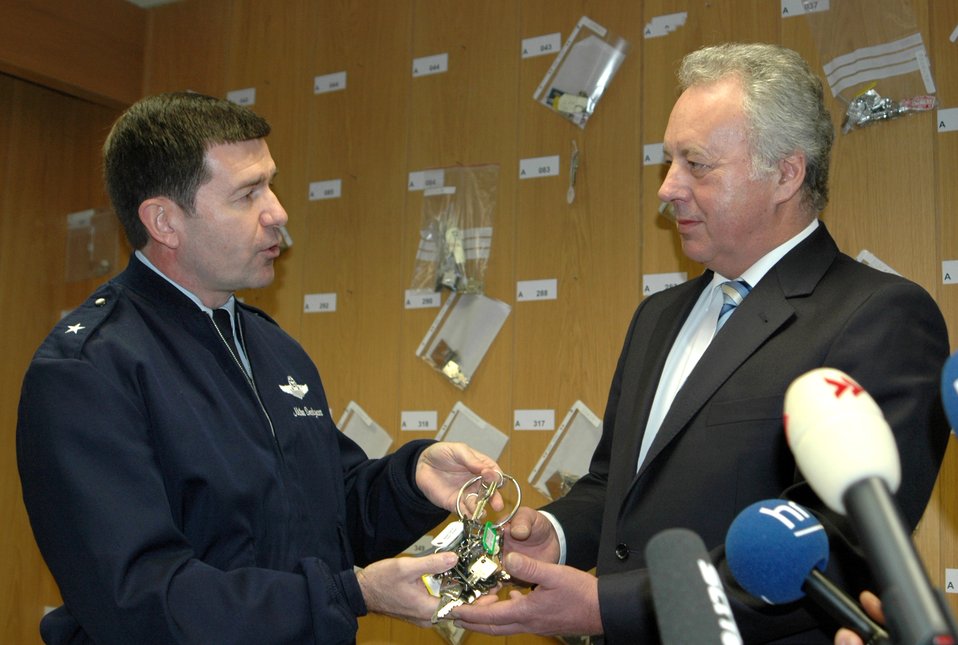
Gateway closes

RHEIN-MAIN AIR BASE, Germany (AFPN) -- Brig. Gen. Mike Snodgrass hands the keys to this longtime airlift base to Manfred Scholch. The symbolic event, held today, marked the last Air Force function here. After 60 years as the